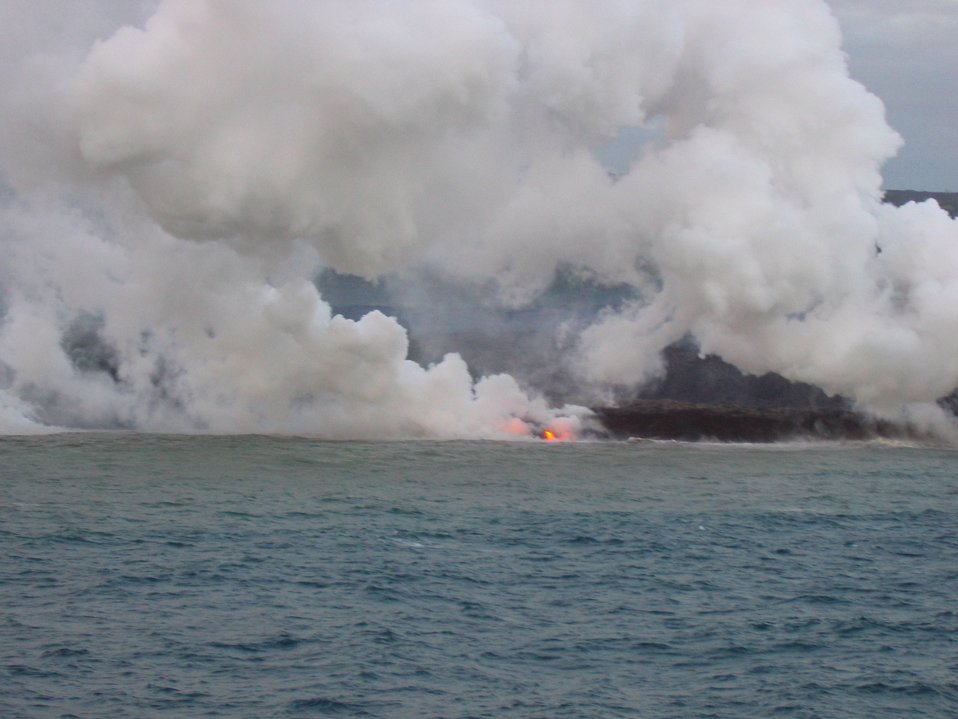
Lava flow entering the sea on SE coast of Hawaii.